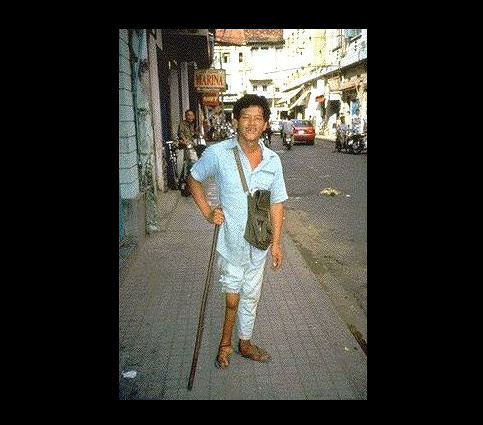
Polio